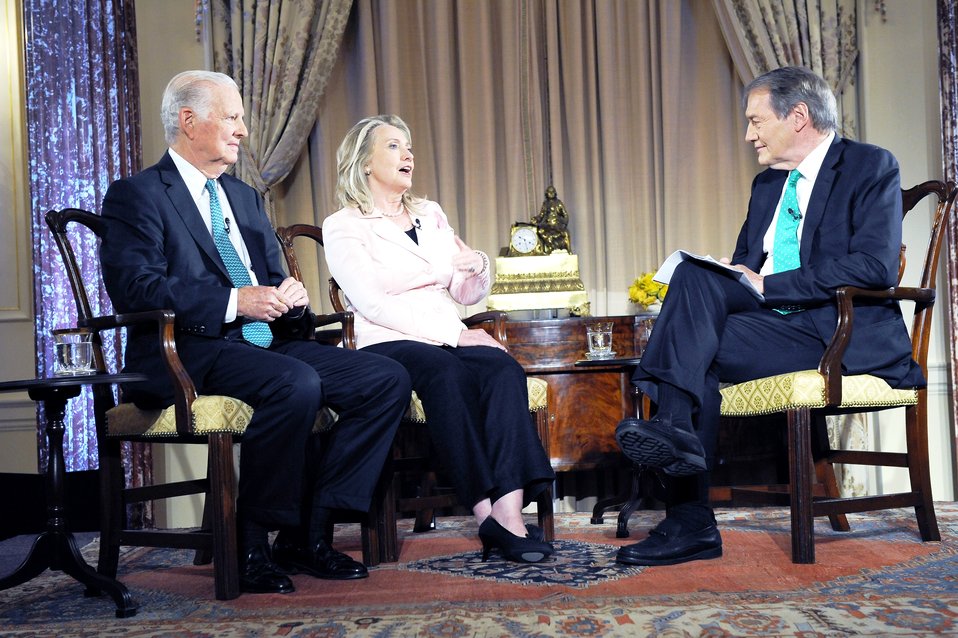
Secretary Clinton and Former Secretary Baker With Charlie Rose

U.S. Secretary of State Hillary Rodham Clinton and Former U.S. Secretary of State James A. Baker, III participate in a “Conversation on Diplomacy, Moderated by Charlie Rose” at the U.S. Department of State in Washington, D.C., on June 20, 2012.